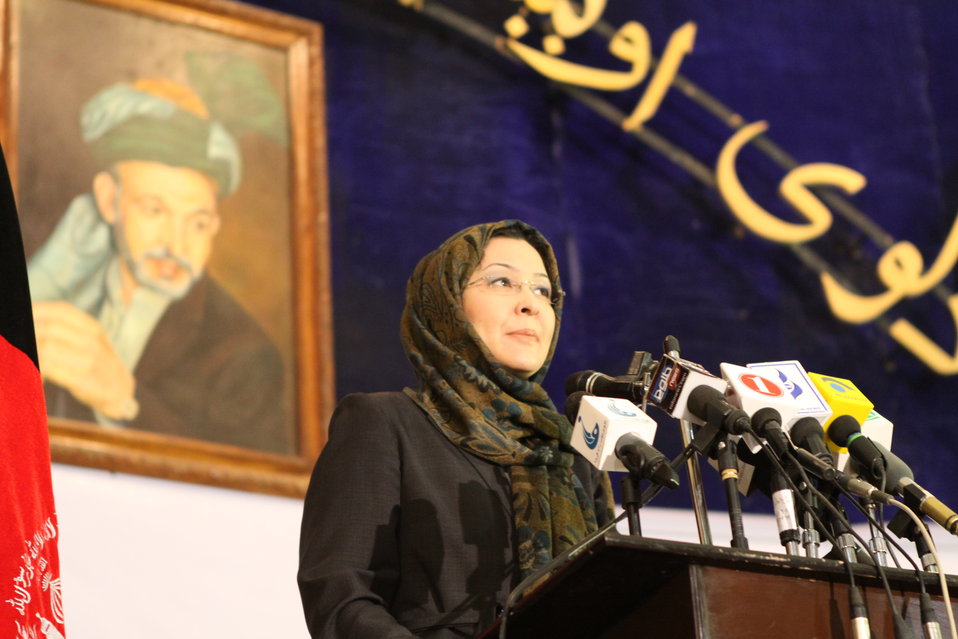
Community Health Workers Celebrated

Kabul, Afghanistan | December 5, 2010 — In support of the United Nations designated International Volunteer Day for Economic and Social Development, Afghanistan’s Ministry of Public Health celebrated its annual Community Health Worker Day today. Acting Minister of Public Health Dr. Suraya Dalil, USAID Senior Deputy Mission Director Robert Hellyer, other government officials, and international donors joined in recognizing the critical contribution of community health workers in Afghanistan and encouraging them to continue their voluntary support to their communities.
The event praised the contributions of the more than 22,000 volunteers throughout the country who deliver community level health-education, counseling, and services out of village health posts located in private homes. The Ministry of Public Health envisioned that community-based healthcare programs will actively encourage communities and families to adopt healthy lifestyles and behaviors, and provide families access to high quality and socially acceptable preventative medicine and life-saving services.
“We have 22,000 community health workers in Afghanistan that are able to implement the basic and standard medicines. They all have been trained through a job description,” said Minister Dalil. Addressing the health workers, she added, “I am proud and feel powerful that I have people like you.”
USAID-funded health projects collaborate closely with the Ministry of Public Health to improve the health and nutritional status of Afghans, provide quality primary healthcare, and promote healthy behaviors at the community and household-levels. USAID supported the training of more than 9,000 of the volunteer community health workers currently working in Afghanistan.
“On behalf of the American people, I congratulate the Community Health Workers for their diligence to gain the skills and knowledge necessary to serve their communities in this important role,” said USAID Senior Deputy Mission Director Hellyer. “USAID strongly supports community based health care and believes that quality community-based health services are essential to reaching Afghanistan’s Millennium Development Goals.”
To support the Basic Package of Health Services, USAID assisted in developing the community health worker training manual, helped train community health worker supervisors and master-trainers, facilitated in-service training, and produced and developed reporting tools, job aids, and education materials.